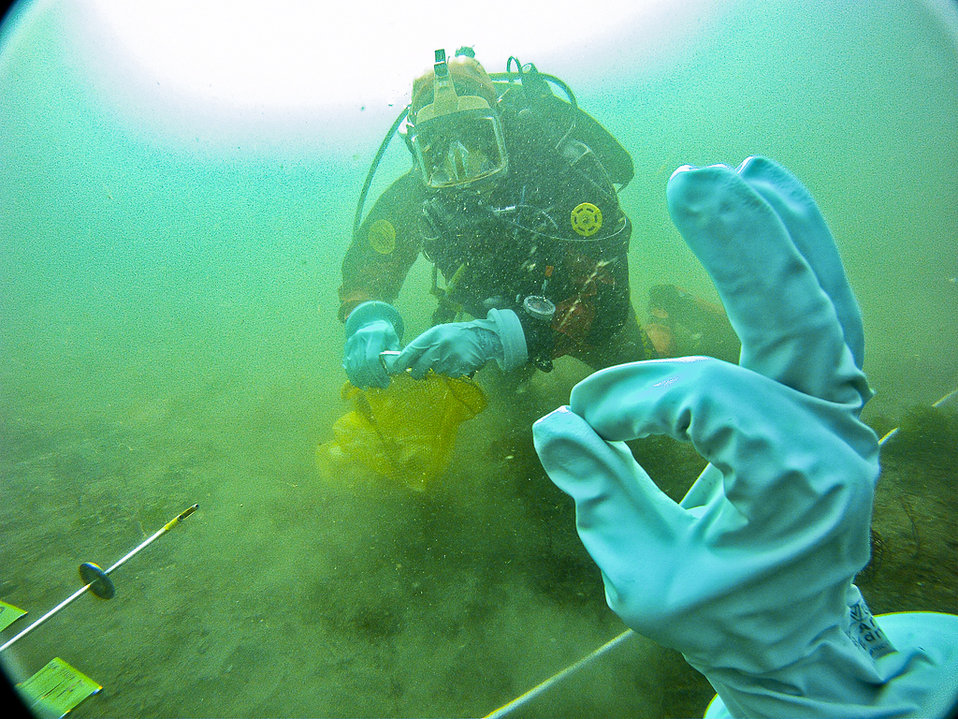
'Talking' underwater to safely collect samples

As the EPA diver in the center prepares to collect a sediment grab sample, his dive buddy gives him the universal 'ok' sign to go ahead.

Here, divers were sampling an underwater Superfund cap to help determine if the cleanup measures were working. At the Pacific Sound Resources site, EPA divers took sediment samples as well as placed and retrieved solid phase microextraction devices which absorb site contaminants over a period of time. After they are collected from the bottom, they are sectioned at the lab to determine what, if any contaminants, benthic life would be exposed to and whether or not additional work might be necessary.

To follow more closely what our divers do across the country check out www.facebook.com/EPADivers